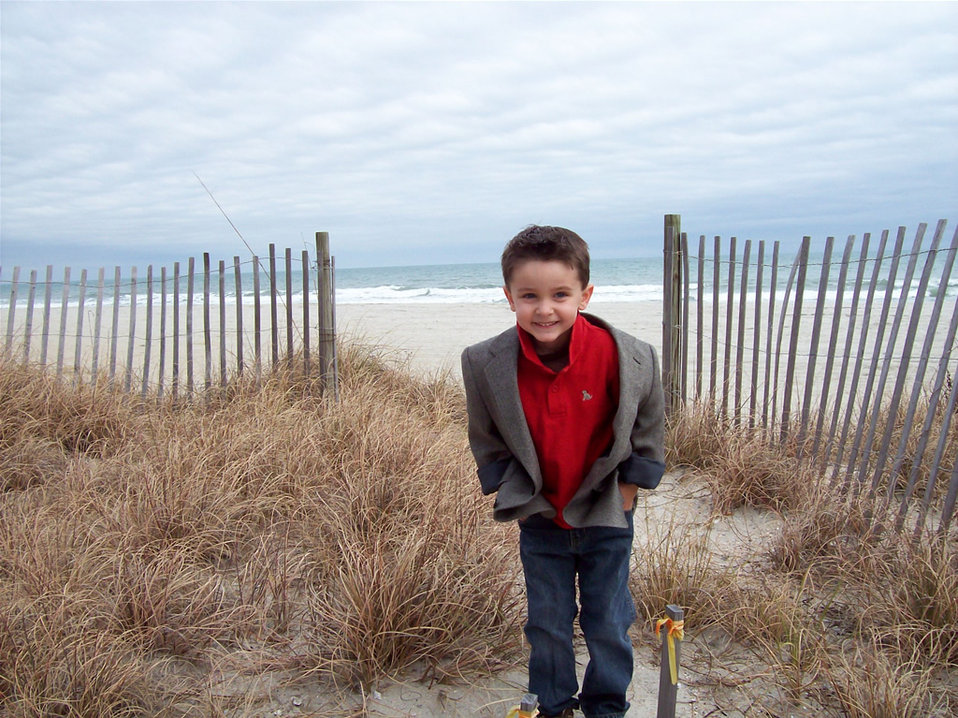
Uploaded by request of Jill Mongelli

Taken at beach in South Carolina

Who said you couldn't enjoy the ocean during the winter? Just a month ago, my son and I were walking along side the beach, enjoying the environment, talking about the dunes, the importance of them and picking up trash...as we were doing so...he turned to me and said 'mommy this is just so beautiful'. Hearing those words come out of his little southern accent was priceless.